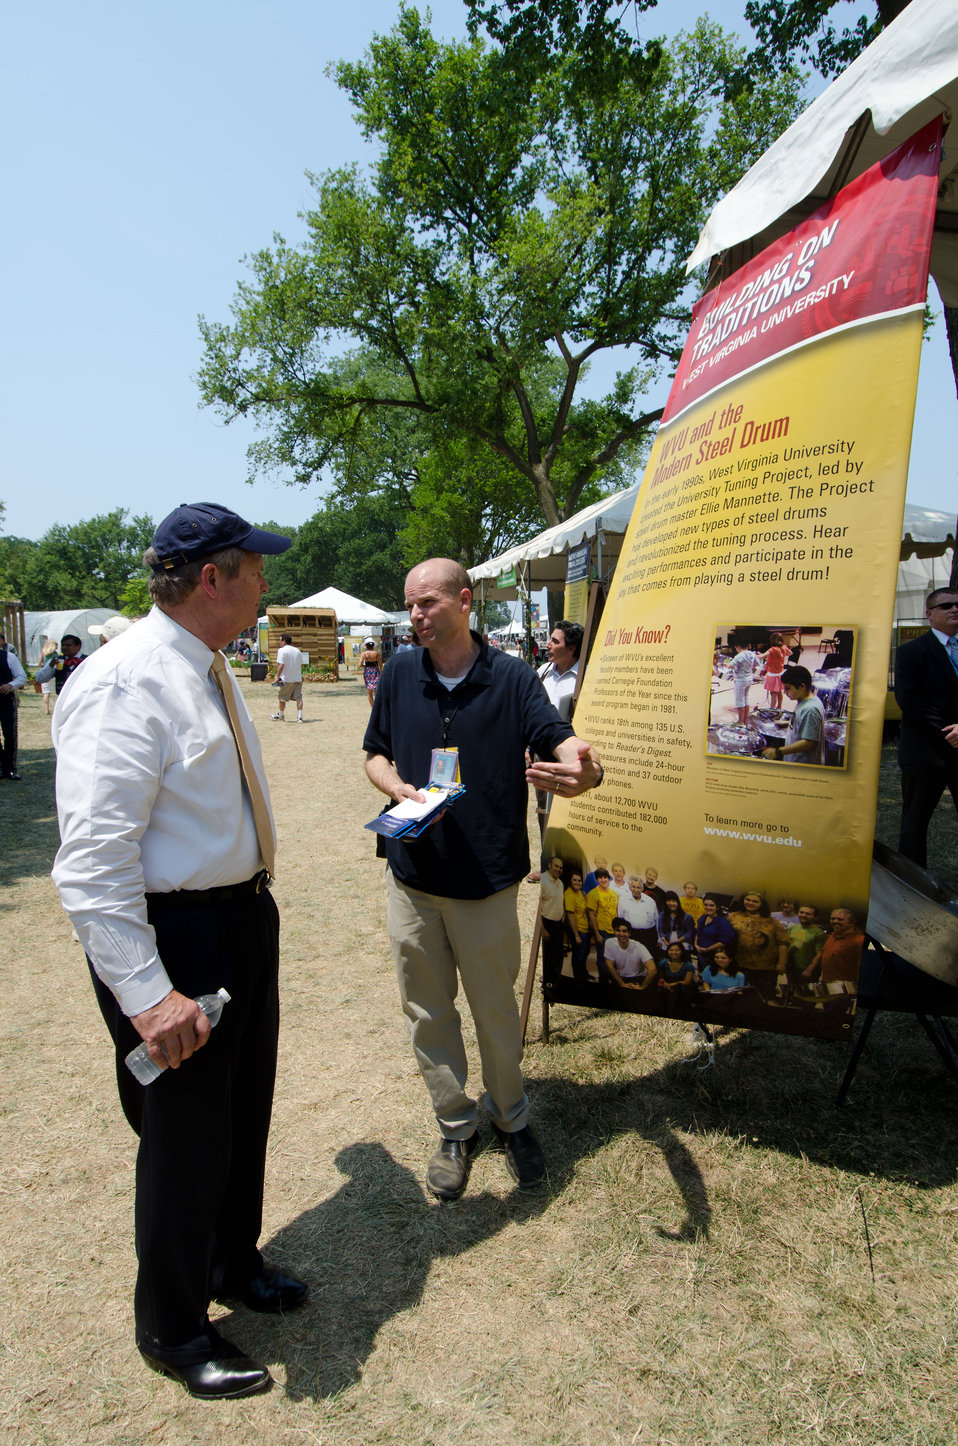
Smithsonian Institution’s Stephen Kidd (right), talks to Agriculture Secretary Tom Vilsack about various aspects of the 2012 Smithsonian Folklife Festival, on the National Mall in Washington, D.C. on Friday, June 29, 2012 Near by is the Mississippi State University Mobile Veterinary Clinic that serves the Northern Mississippi area by providing Spay and neuter services to those in need, and provides medical experience for students. One of the three themes this year is “Campus and Community.” It celebrates the 150 years of the USDA and the Land-Grant University System. The U.S. Department of Agriculture (USDA) and the Land-Grant system extend education across the country, contributing to American agriculture success and rural prosperity. “Campus and Community” has demonstrations, discussions, hands-on activities, and entertainment to that showcase the many ways that this partnership works to improve American agriculture and rural life.